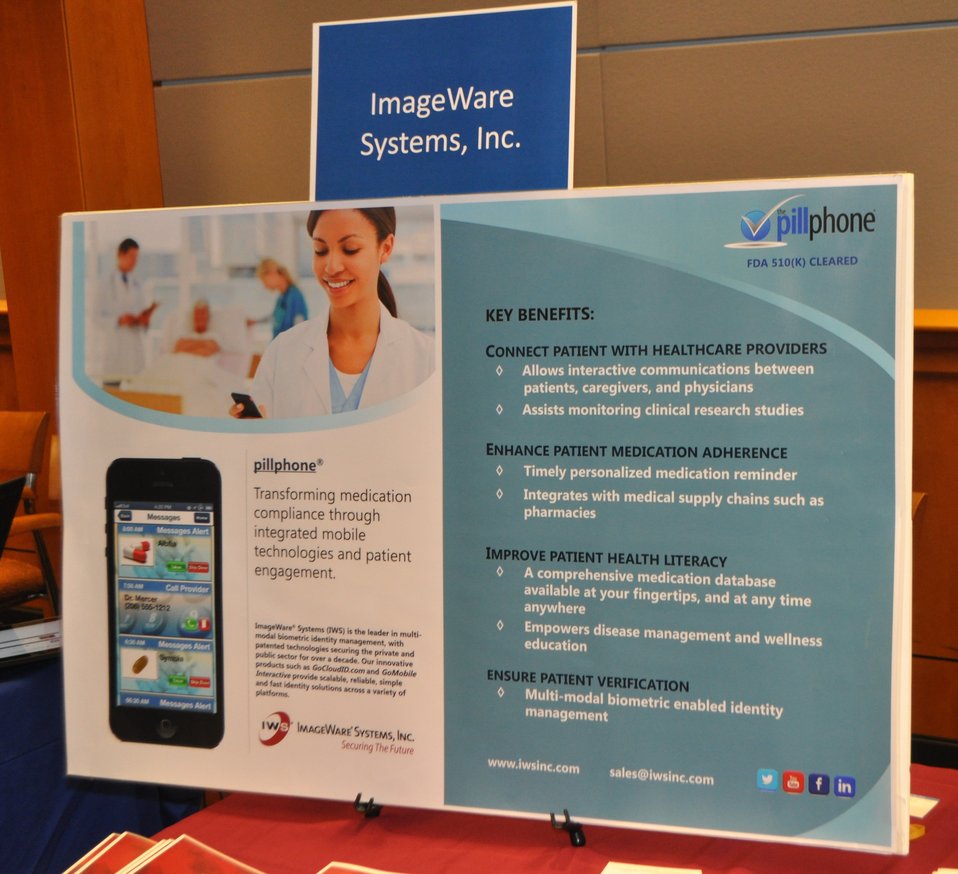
12.6.13 mHealth Innovation Expo

FCC mHealth Innovation Expo.